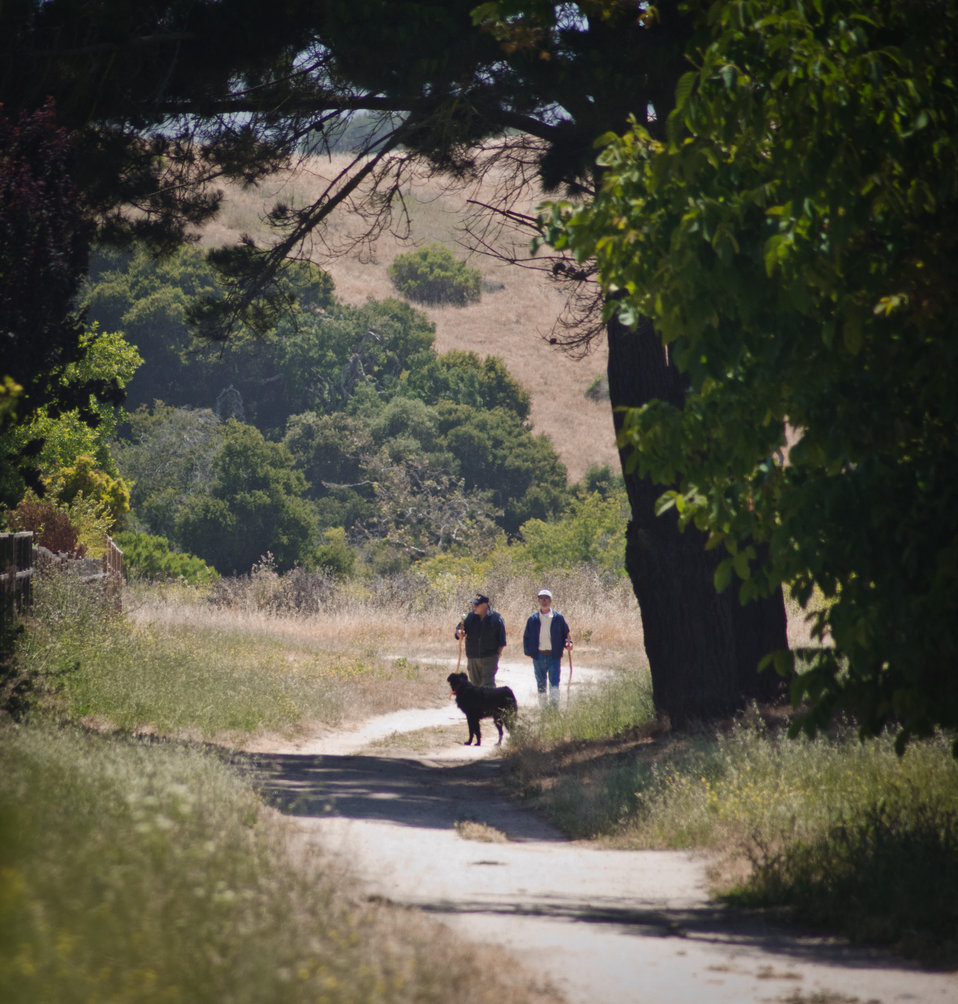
Charles Cody, Mike Bolion and dog “Flattie” walk one of the trails along Toro Creek Road in Salinas, CA., on Thursday, June 16, 2011. More than 75,000 visitors walk these trails each year. On the right are Toro Creek and its riparian zone. This area between the creek bottom and the land along the bank is an ecosystem that sometimes blocks easy sight of the creek. In this region, a combination of deep-rooted trees such as Willow and Oak, and drought tolerant grass and bushes. They provide organic stabilization of the soil. A functioning riparian zone supports a clean Monterey Bay (eight miles away) by removing sediments and other contaminants; reducing the risk of flooding and associated damage; reducing stream channel and stream bank erosion; increasing available water and stream flow duration by holding water in stream banks and aquifers; supporting a diversity of plant and wildlife species; to name some of the benefits stated in references. This Bureau of Land Management property also allows ranchers to purchase permits allowing their sheep (totaling 1,000 to 2,000) to graze the hills of the 7,200-acre property. The reduction of excess grass reduces fuel for fires. The sheep manure also provides nutrients to help the soil remain healthy. The grass roots reduce erosion on the hillsides.